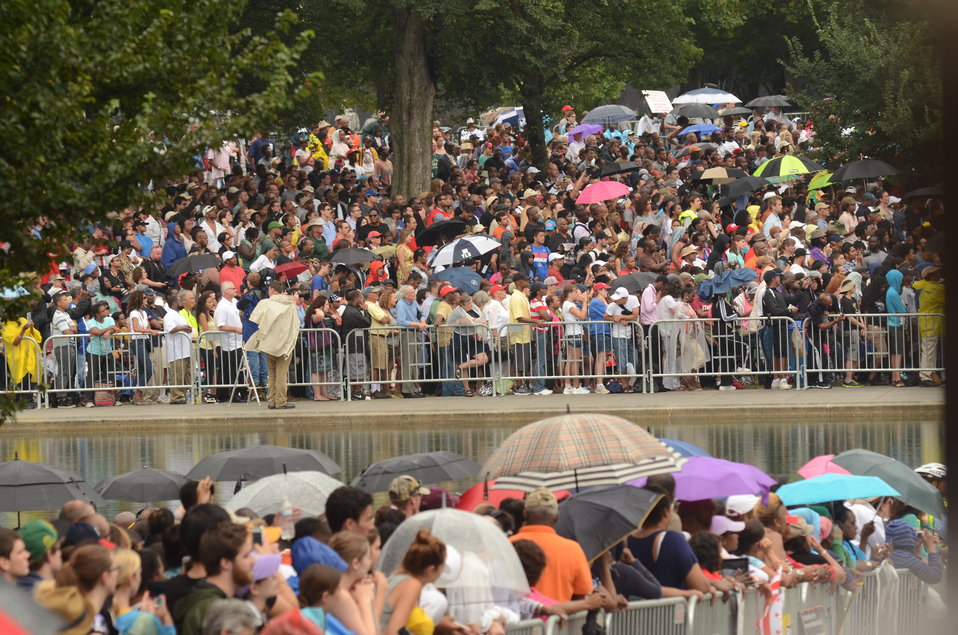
Marchers listen to speakers at the Lincoln Memorial for the March on Washington, D.C., on Wed., Aug. 28, 2013.